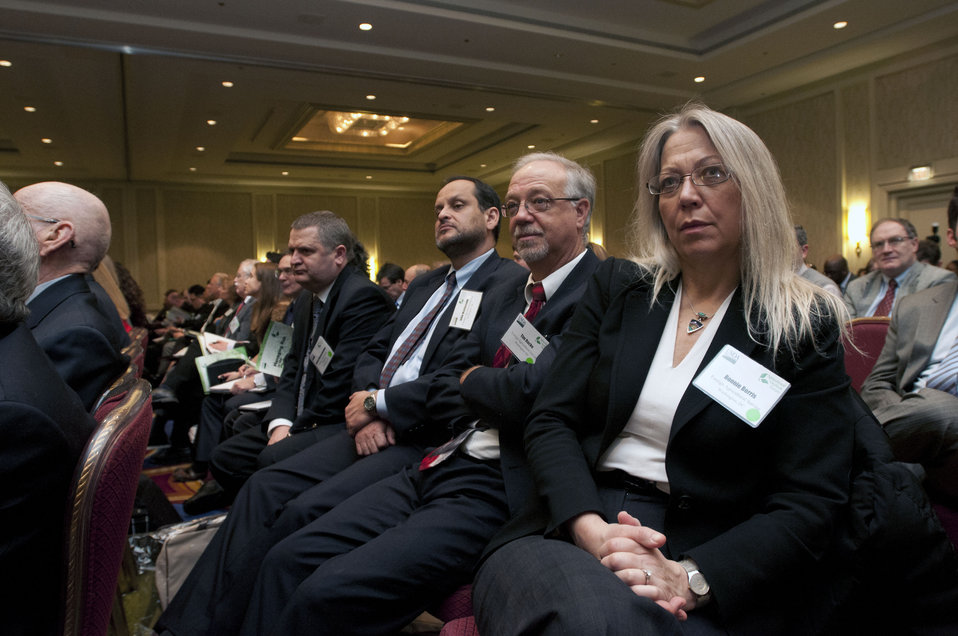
Audience members listen to speakers at the 2013 Agricultural Outlook Forum, in Arlington, VA. on Feb. 21, 2013.